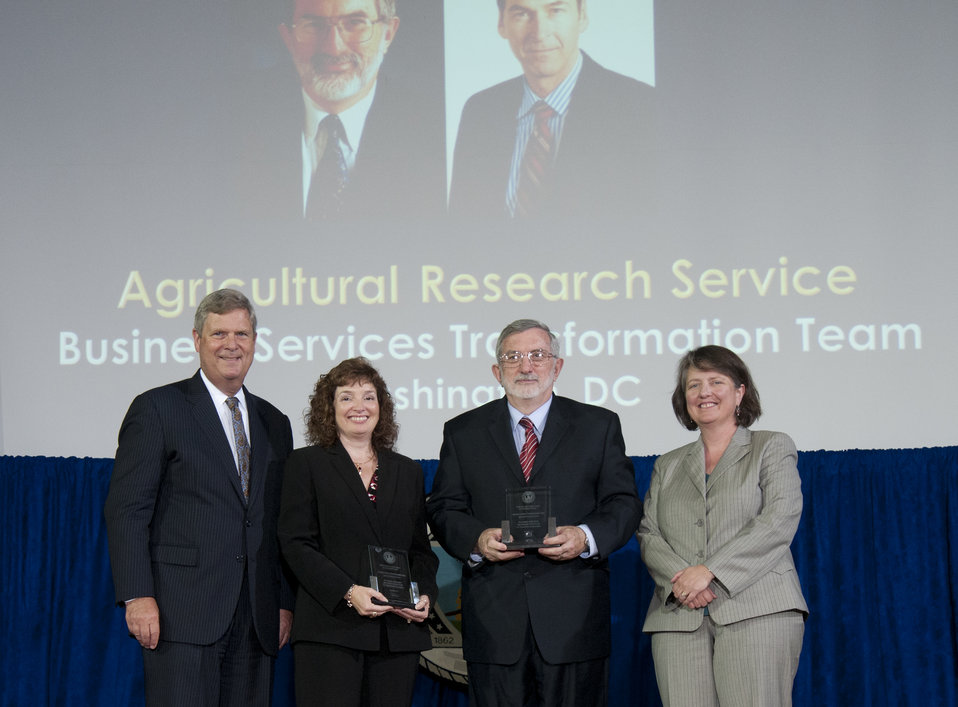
Agriculture Secretary Tom Vilsack and Agriculture Deputy Secretary Kathleen Merrigan present the Secretary’s Honor Award to Business Services Transformation Team Agricultural Research Service (ARS) group leaders Caird E. Rexroad, Jr. and Jeffrey M. Van Houten at the U.S. Department of Agriculture (USDA) 64th Annual Honor Awards Ceremony in Washington, D.C. on Wednesday, Sept. 12, 2012. The Business Services Transformation Team lead the successful transformation of Research, Education, and Economics’ business services into virtual centers that effectively use limited staff, reduce costs, and capitalize on new technologies to enhance work performance.